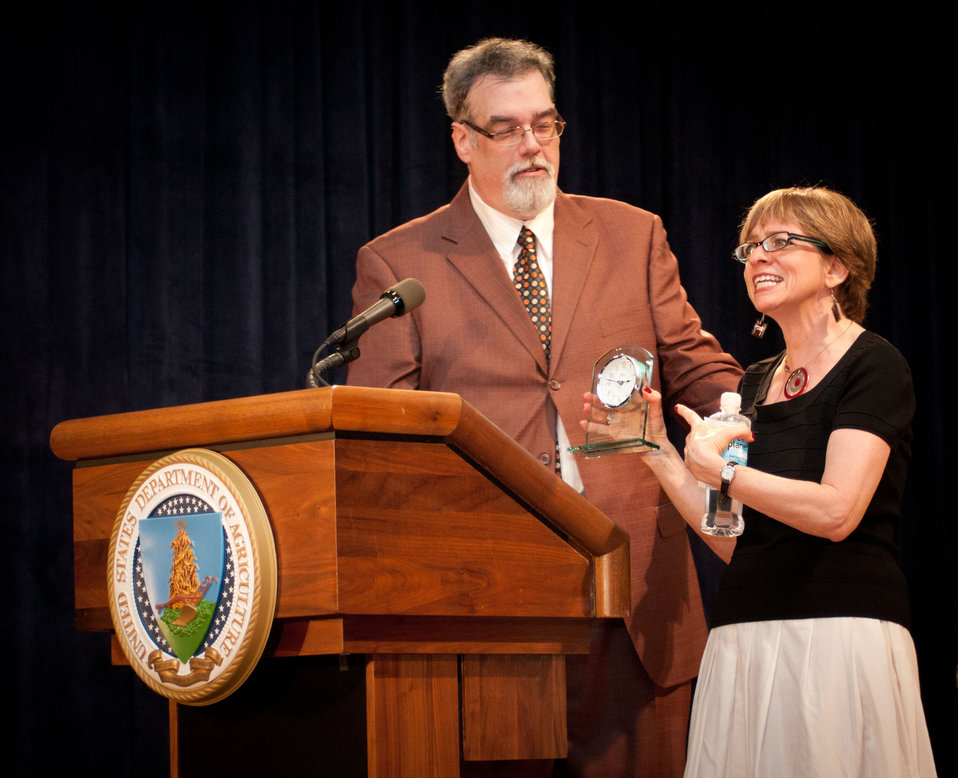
U.S. Department of Agriculture (USDA) Lesbian, Gay, Bisexual and Transgender (LGBT) Special Emphasis Program Manager Perry Stevens (left) presented U.S. Equal Employment Opportunity Commission, Commissioner Chai Feldblum (right) a clock as a gift for being the guest speaker for the USDA LGBT Pride Observance Program on Thursday, June 2, 2011 in the Jefferson Auditorium, Washington, DC. Commissioner Feldblum made a comment about the connection between civil rights and time, and that a clock was the prefect gift.